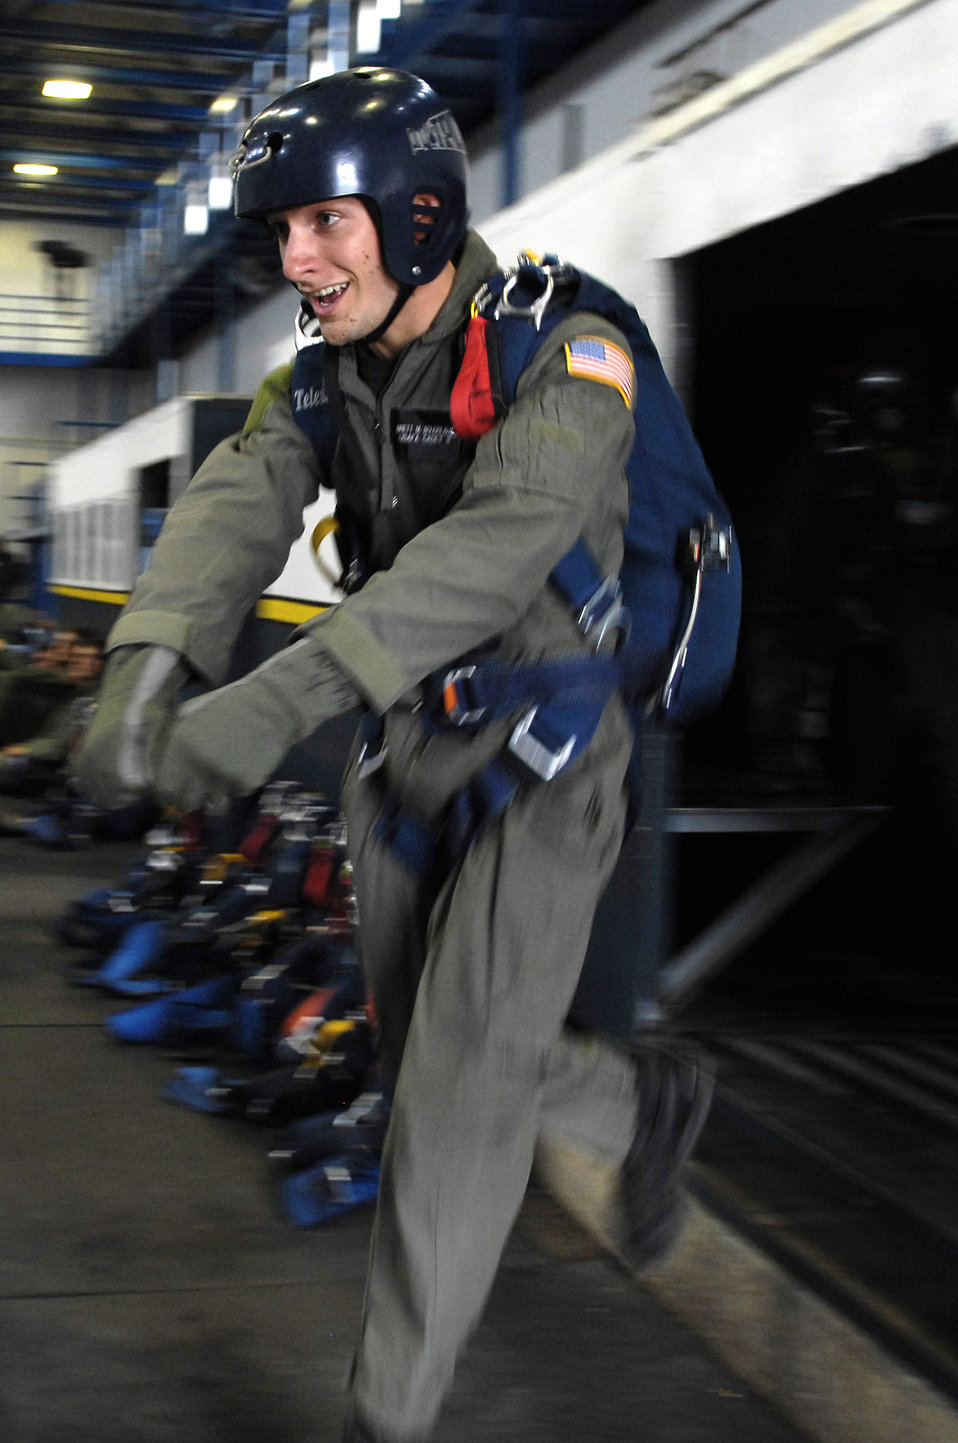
Earning those jump wings

U.S. Air Force Academy Cadet 3rd Class Brett Boudreaux clears the jump plane trainer July 7 during Airmanship 490, Basic Parachuting, an airmanship program where cadets earn their basic jump wings after successfully completing five free-fall jumps.